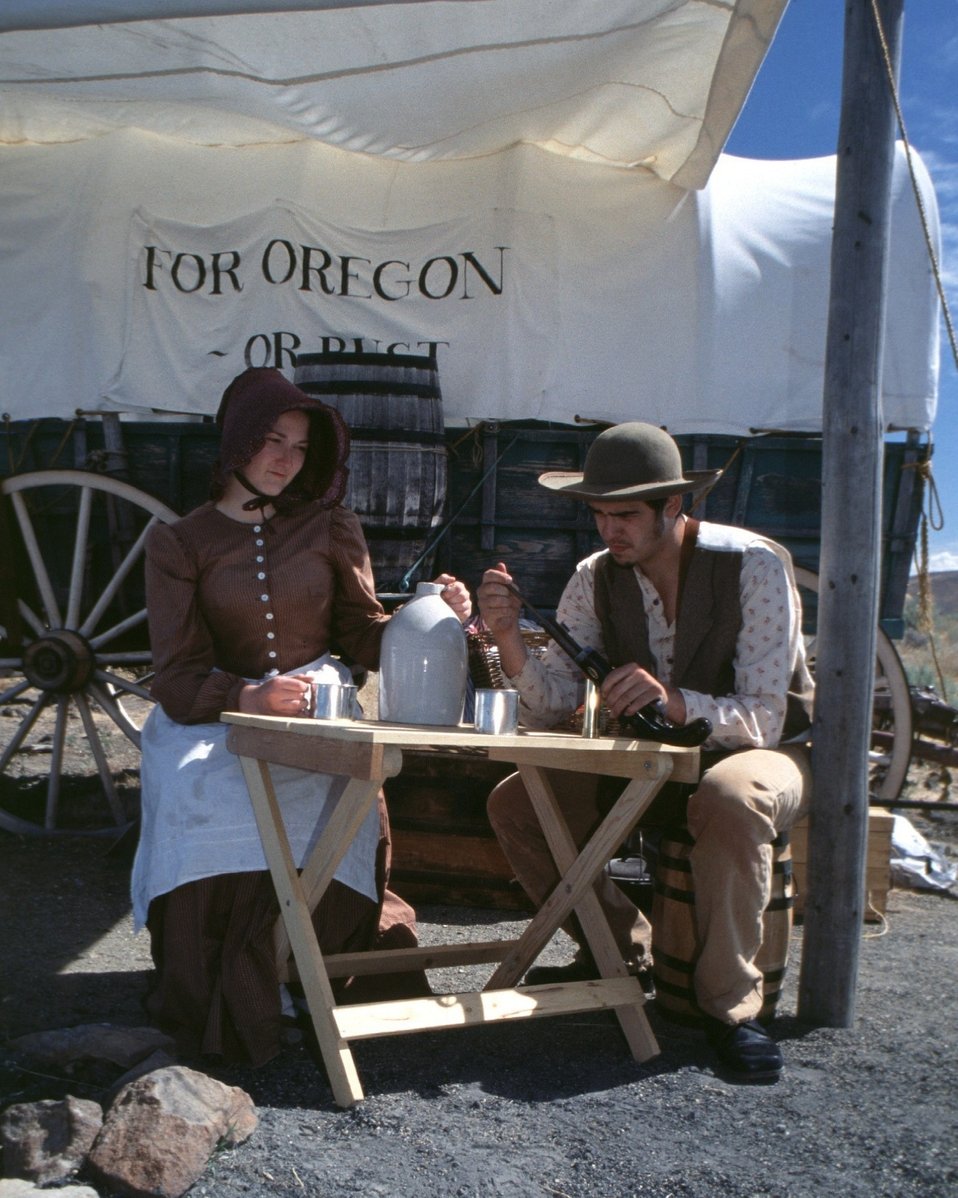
Rebecca Crow and Brandon Kames portray a pioneer couple at a wagon encampment.